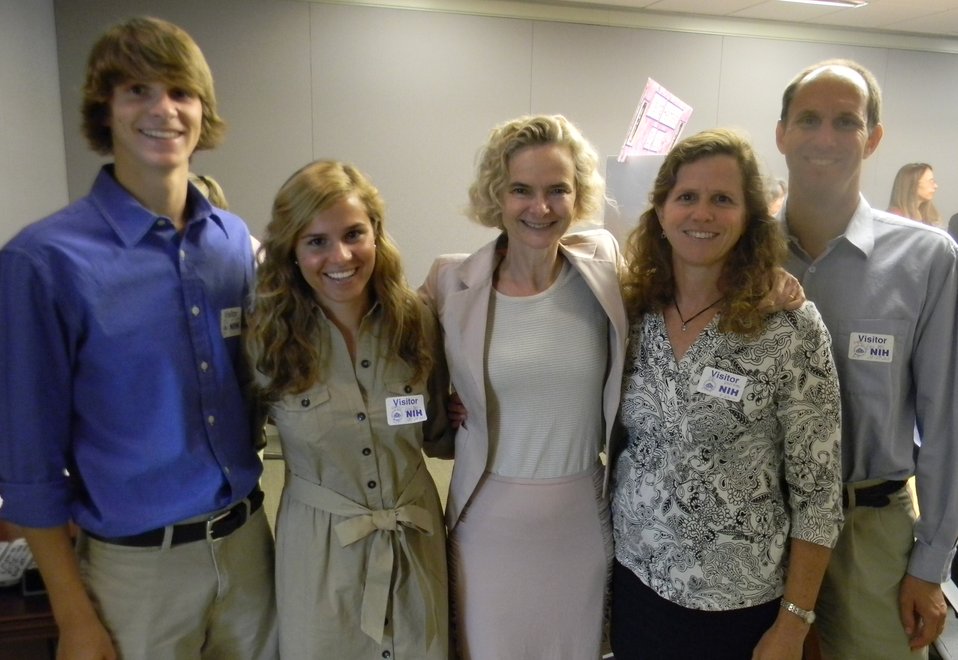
Schumacher family with NIDA director